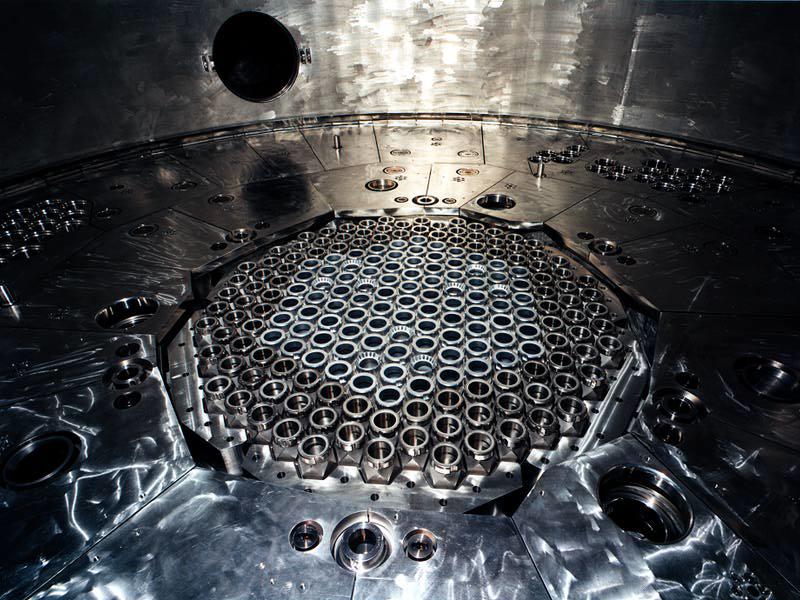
THE TOP OF THE FAST FLUX TEST FACILITY REACTOR CORE PRIOR TO THE SODIUM SYSTEM FILL.

THE FAST FLUX TEST FACILITY AT DOE'S HANFORD SITE IN RICHLAND, WASHINGTON IS AN INTEGRATED PLANT COMPLEX WHICH INCLUDES A 400-MEGAWATT (THERMAL) SODIUM-COOLED REACTOR AND ITS IMMEDIATE SUPPORT EQUIPMENT AND FACILITIES. IT WAS DESIGNED SPECIFICALLY FOR IRRADIATION TESTING OF FUELS, MATERIALS, AND COMPONENTS FOR BREEDER REACTOR SYSTEMS. AFTER A COMPREHENSIVE REVIEW IT WAS ANNOUNCED ON DECEMBER 19, 2001 THAT DOE WILL PROCEED WITH THE DEACTIVATION OF THE FACILITY.